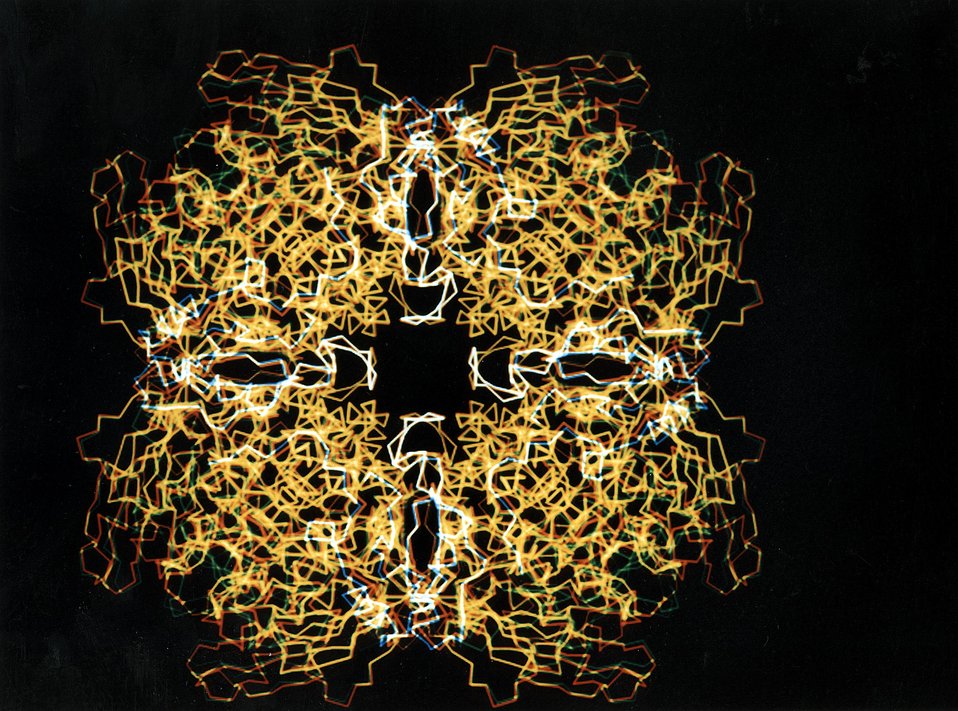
Nature's Most Abundant Enzyme. Another essential element of the photsynthetic process is the conversion of stored energy and CO2 into usable sugars and starches. In this image, the conformation of the active form of the enzyme (green) is superimposed on that of an inactive form (red). Regions that are identical in the two forms appear in yellow.